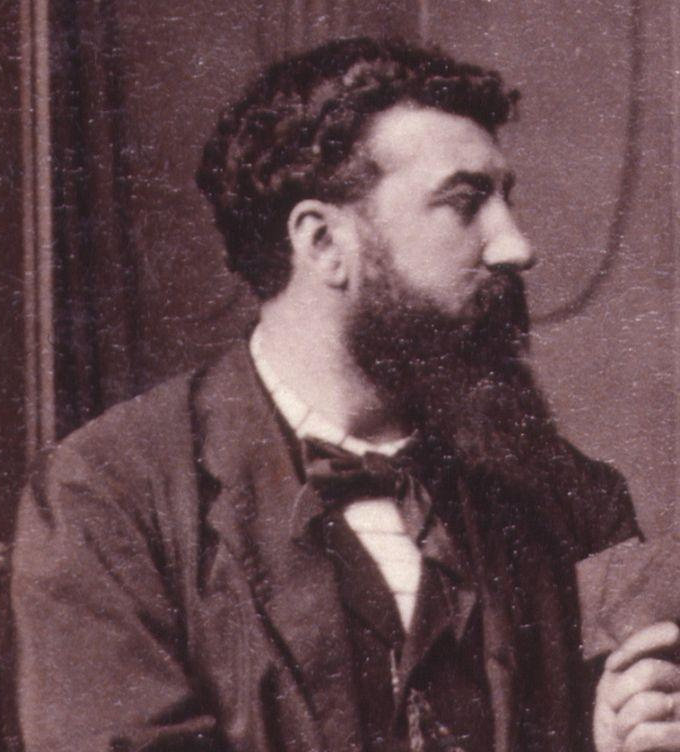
Extracted from Camille Silvy; (Louise Marie Elisabeth Lucie) Alice Silvy (née Monnier); Marie-Louise Silvy (née Pied), by Camille Silvy (died 1910). See source website for additional information.